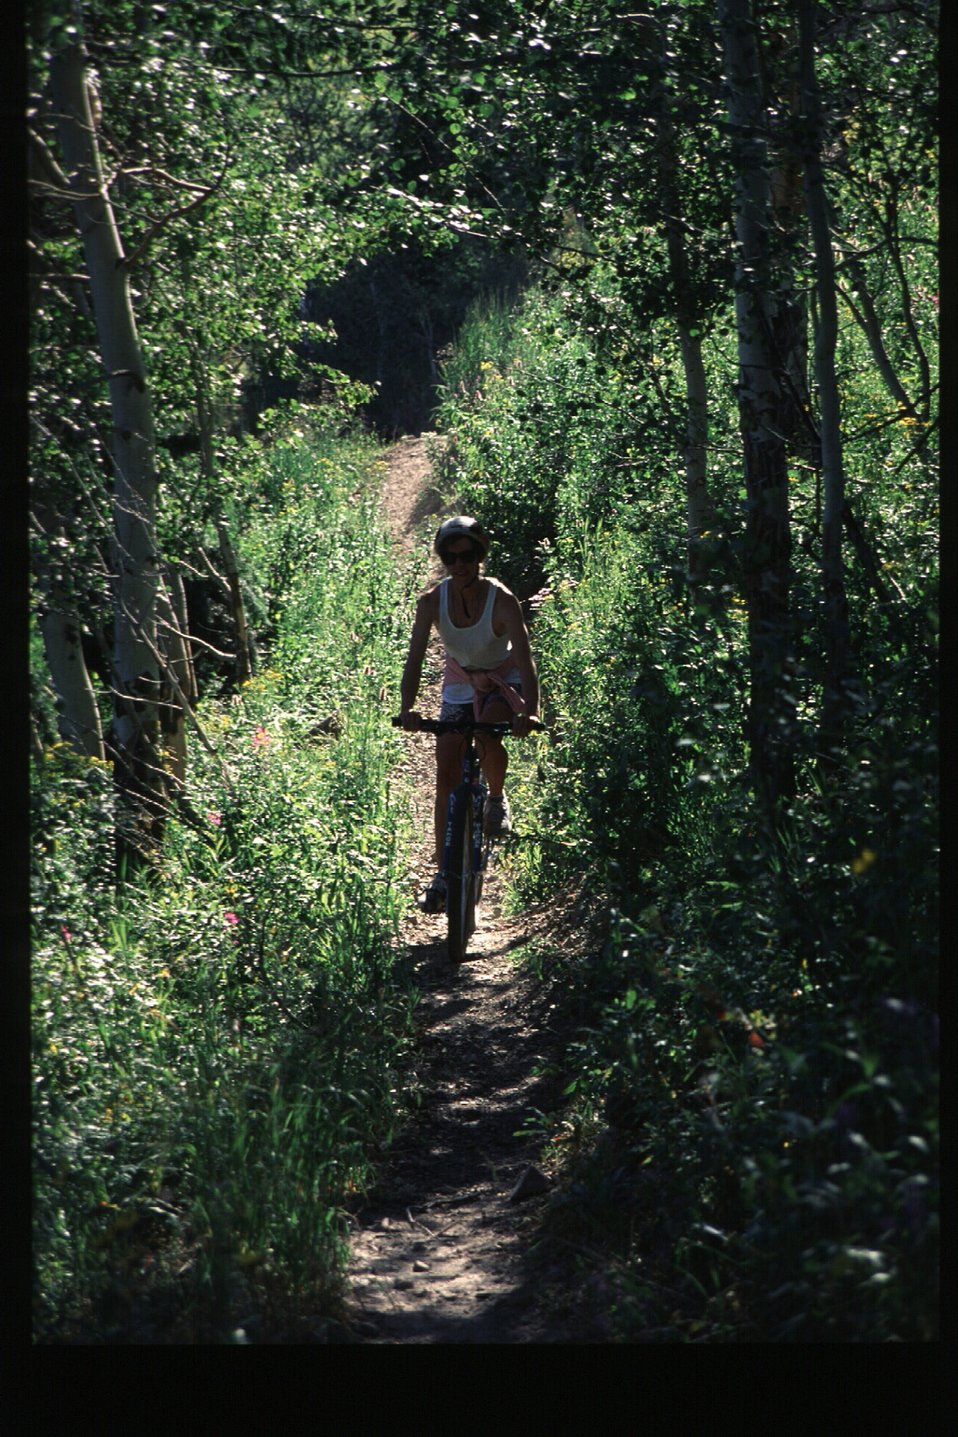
Biking South Fork of Snake River Idaho Falls Field Office USRD Upper Snake River District